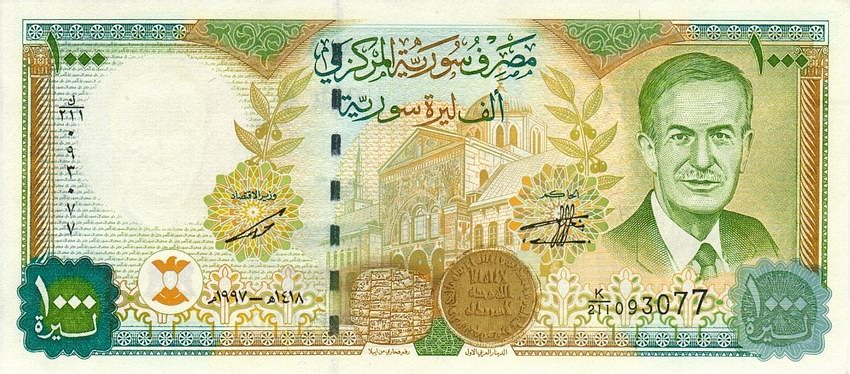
1000 SYP, obverse. I scanned the image myself.